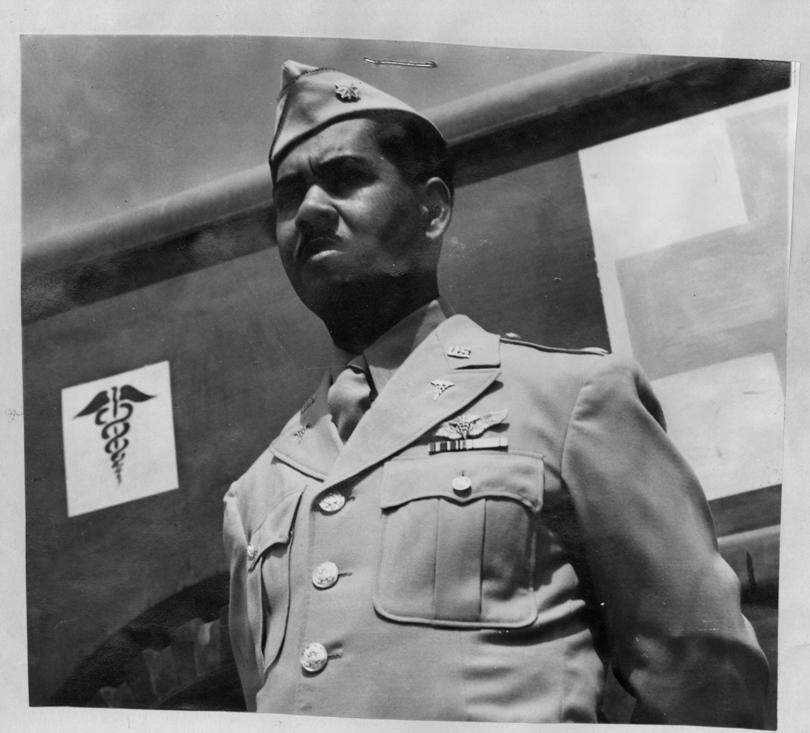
Col. (Dr.) Vance H. Marchbanks Jr.

Maj. Vance H. Marchbanks Jr. in Italy, 1944.